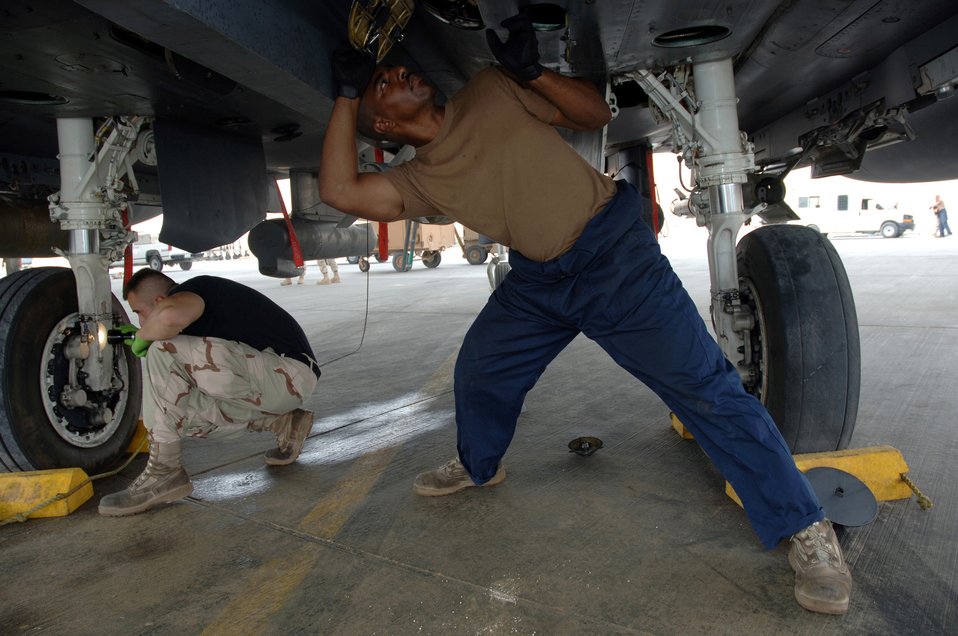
Deployed F-15s

Maintainers with the 379th Expeditionary Aircraft Maintenance Squadron inspects an F-15E Strike Eagle at a forward-deployed location in Southwest Asia, on Wednesday, April 5, 2006. The F-15E is a dual-role fighter designed to perform air-to-air and air-to-ground missions. It is deployed from Seymour Johnson Air Force Base, N.C.